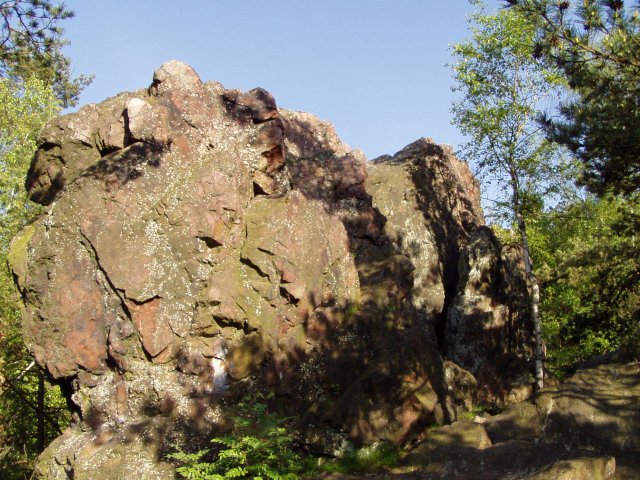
Čeština: Andrejšky - Na skále